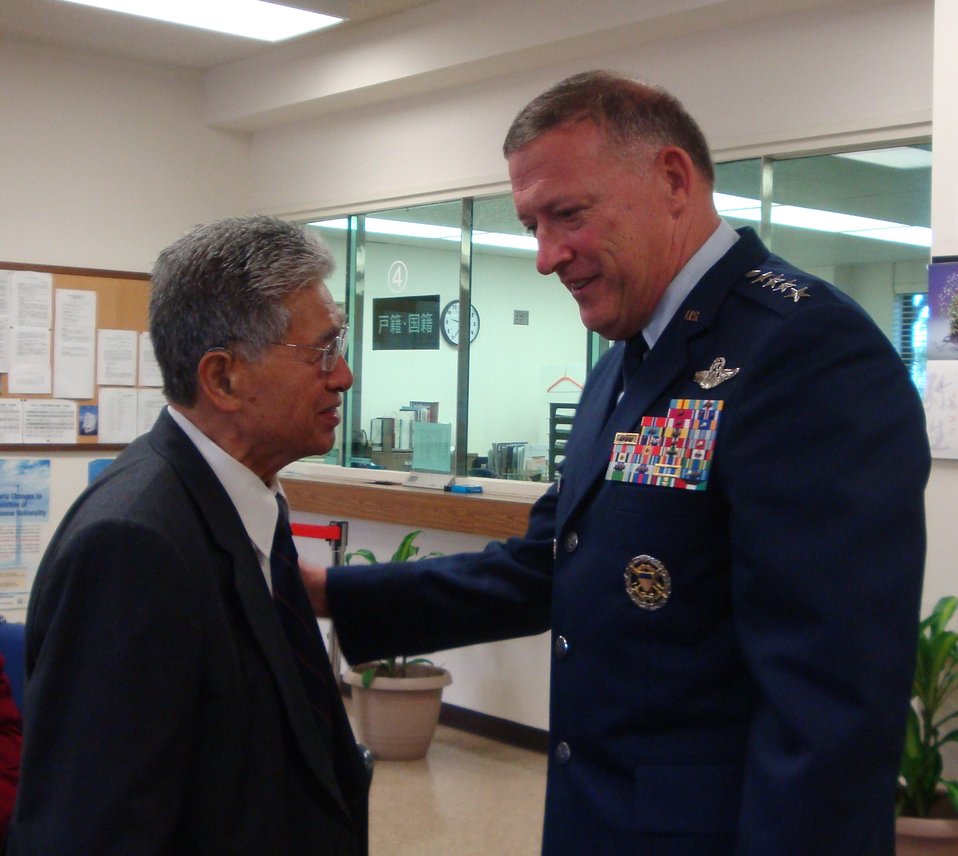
COMPACAF signs Japanese condolence letter

Gen. Gary North, Pacific Air Forces commander, talks with Hawaii Sen. Daniel K. Akaka March 22, 2011, at the Consulate General of Japan in Honolulu. Both expressed their sympathies in a condolence book following the deadly destruction caused by the earthquake and destructive tsunami that hit Japan on March 11.